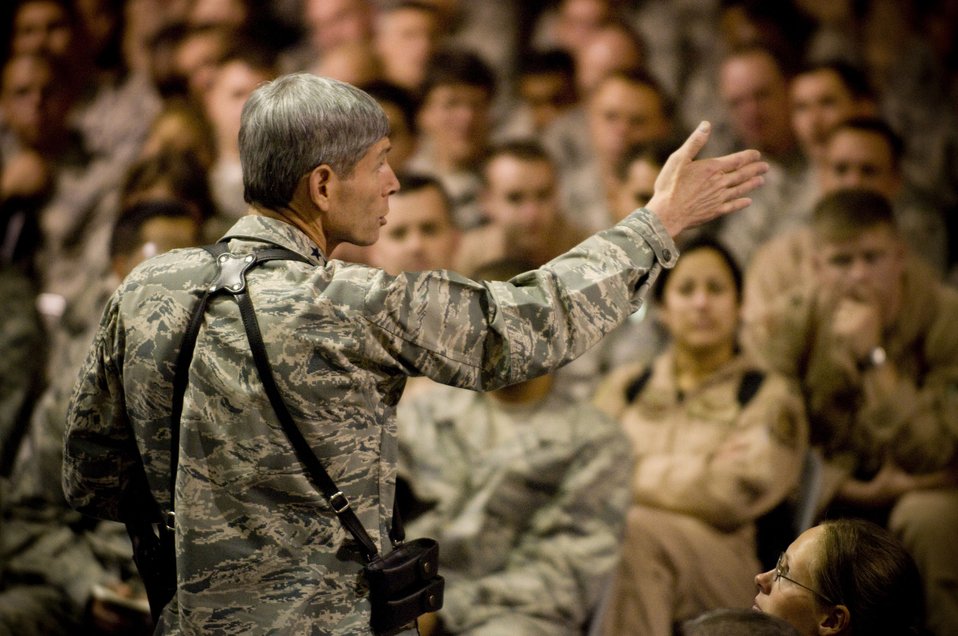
Chief of staff tours Bagram, addresses Airmen's questions

Air Force Chief of Staff Gen. Norton A. Schwartz holds an Airmen's Call Oct. 21 at Bagram Air Field, Afghanistan. General Schwartz hosted an open forum for Airmen to directly ask him questions about his vision for the future of the U.S. Air Force.